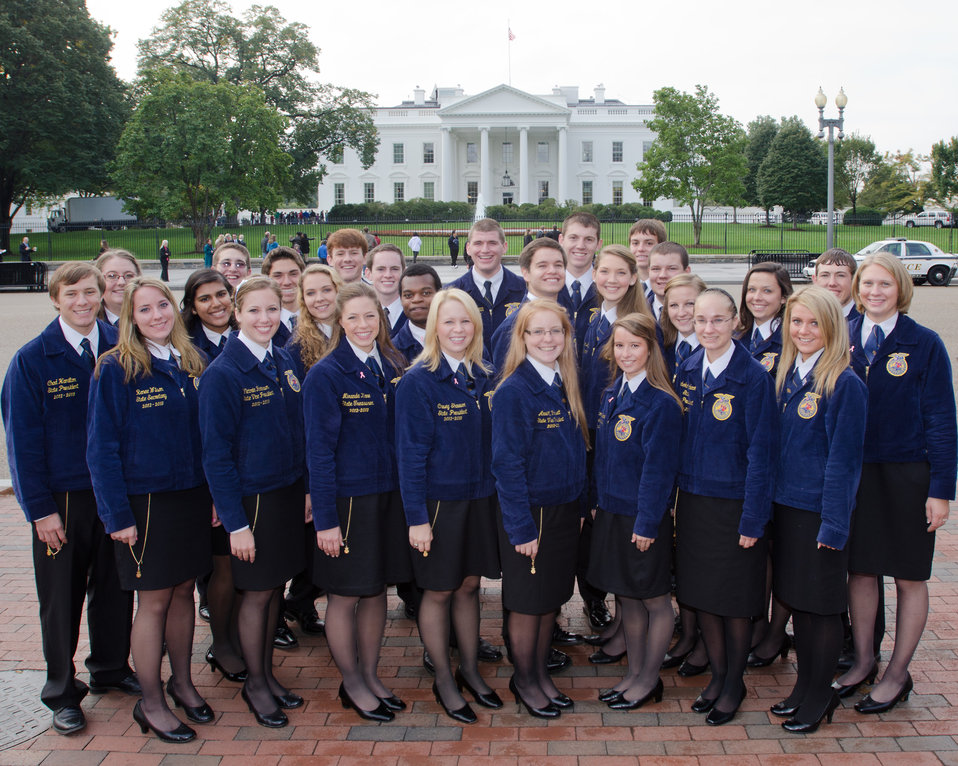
State FFA officers stand in front of the White House in Washington, D.C. on Tuesday, Oct. 9, 2012. Three of these State FFA officers received the Champions of Change award at the Executive Office Building. The Champions of Change program was created to honor ordinary Americans doing great work in their communities. Each week, a different sector is highlighted and groups of Champions, ranging from educators to entrepreneurs to community leaders, are recognized for the work they are doing to serve and strengthen their communities.